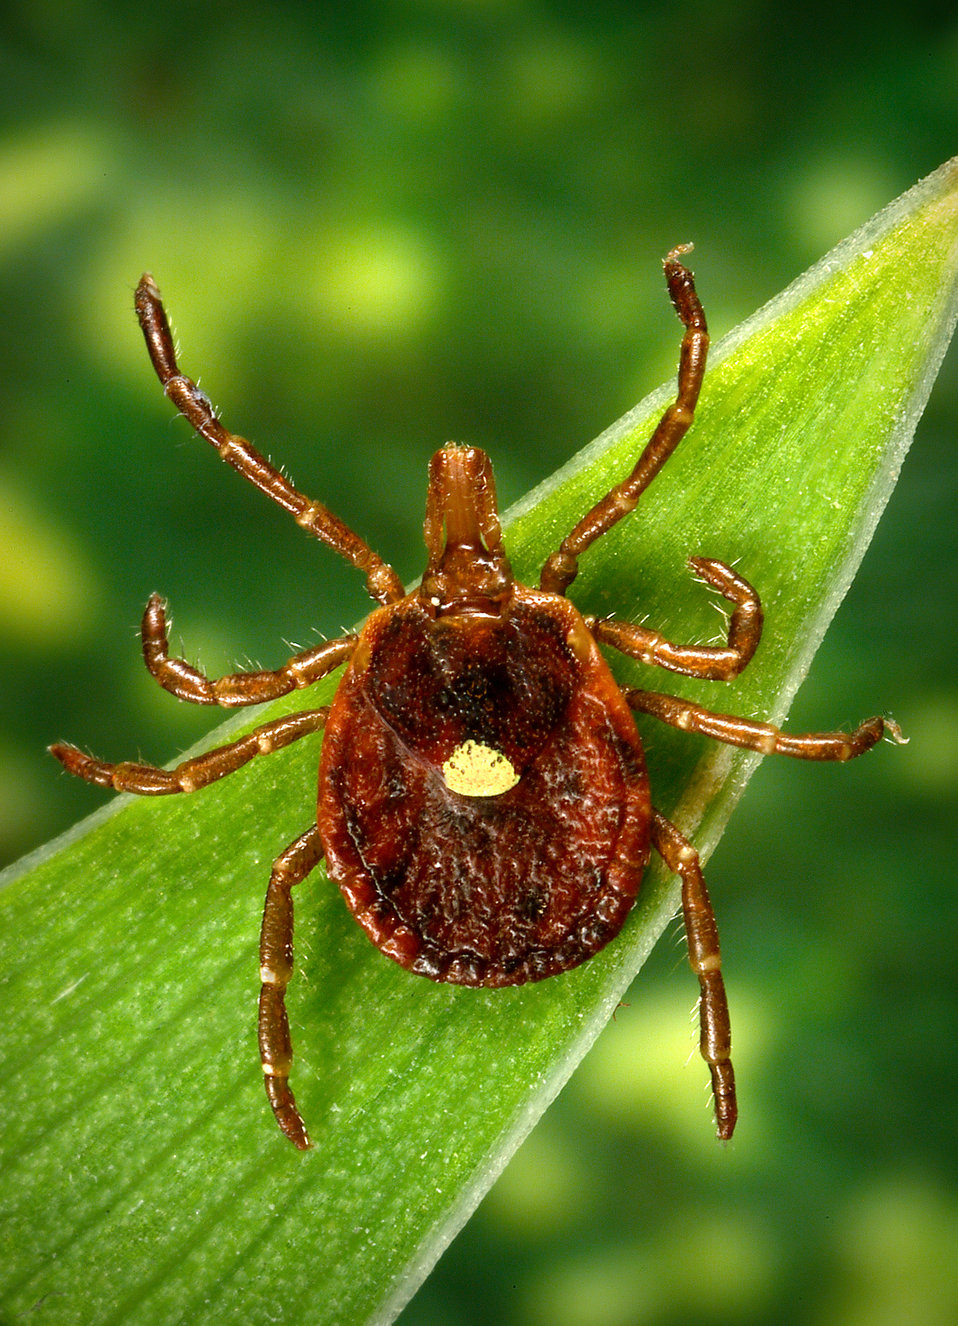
This photograph depicts a dorsal view of a female "lone star tick", Amblyomma americanum. Note the characteristic 'lone star' marking located centrally on its dorsal surface, at the distal tip of its scutum. To view additional images related to this tick specie, see PHIL 4407, 8676 through 8682, 8684, and 8685.